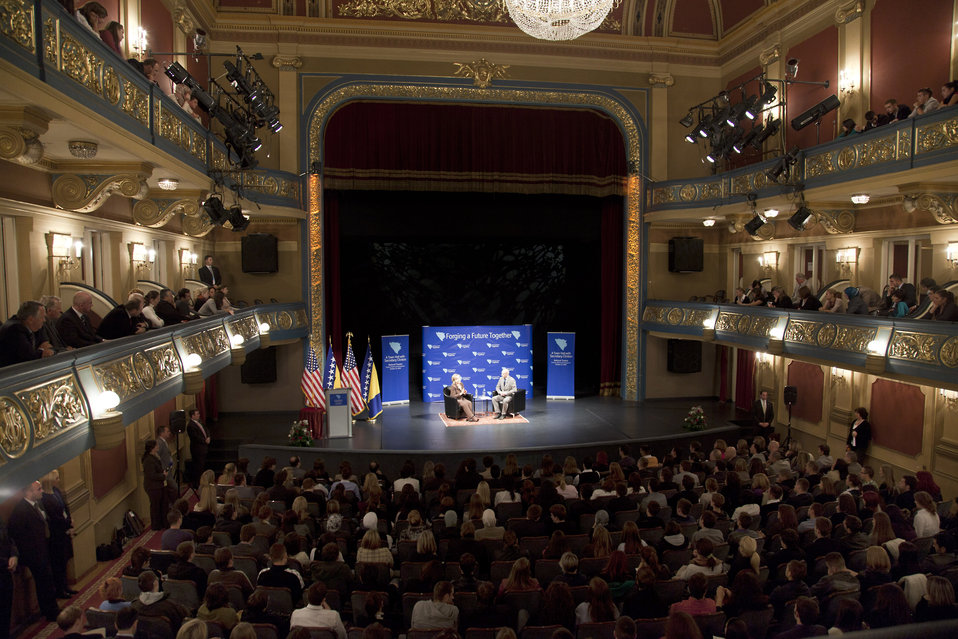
Secretary Clinton Holds a Town Hall

U.S. Secretary of State Hillary Rodham Clinton holds a town hall meeting with university students and civil society representatives, at the National Theater, in Sarajevo, Bosnia and Herzegovina, on October 12, 2010.